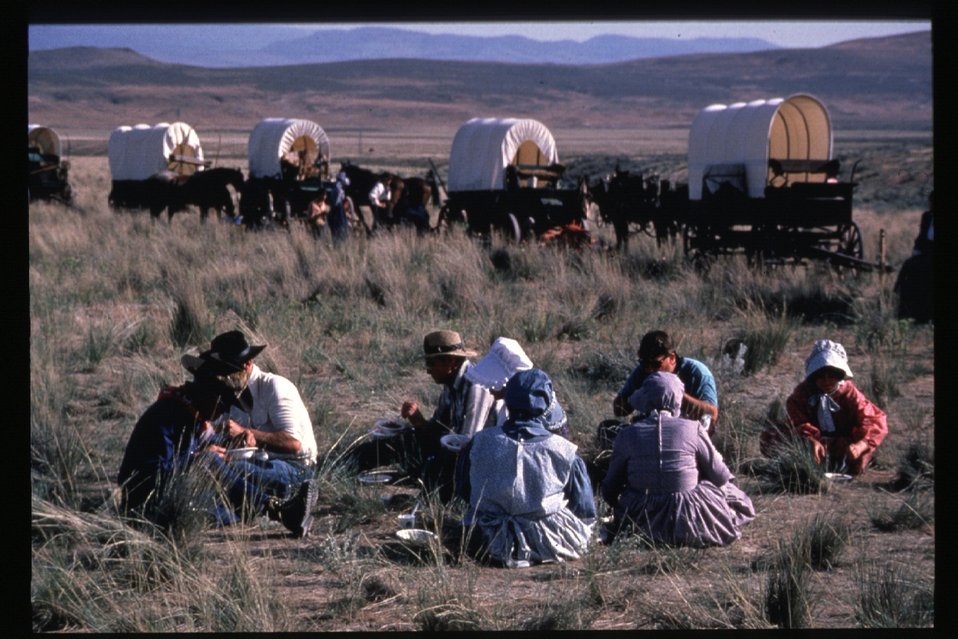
Oregon Trail Reenactment USRD Upper Snake River District